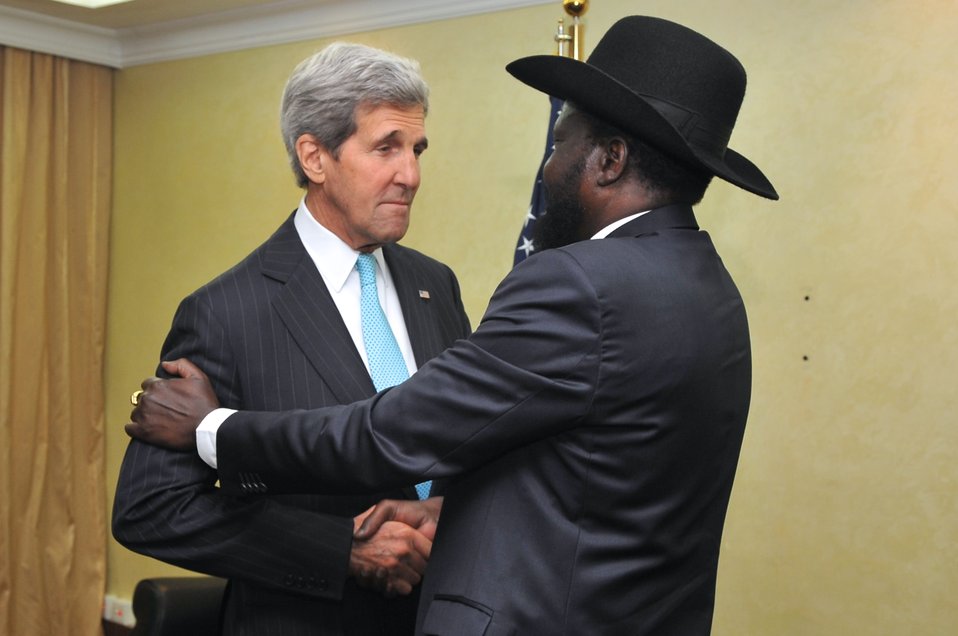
South Sudanese President Kiir Greets Secretary Kerry Before Meeting in Juba

U.S. Secretary of State John Kerry is greeted by South Sudanese President Salva Kiir Mayardit before a meeting in Juba on May 2, 2014.